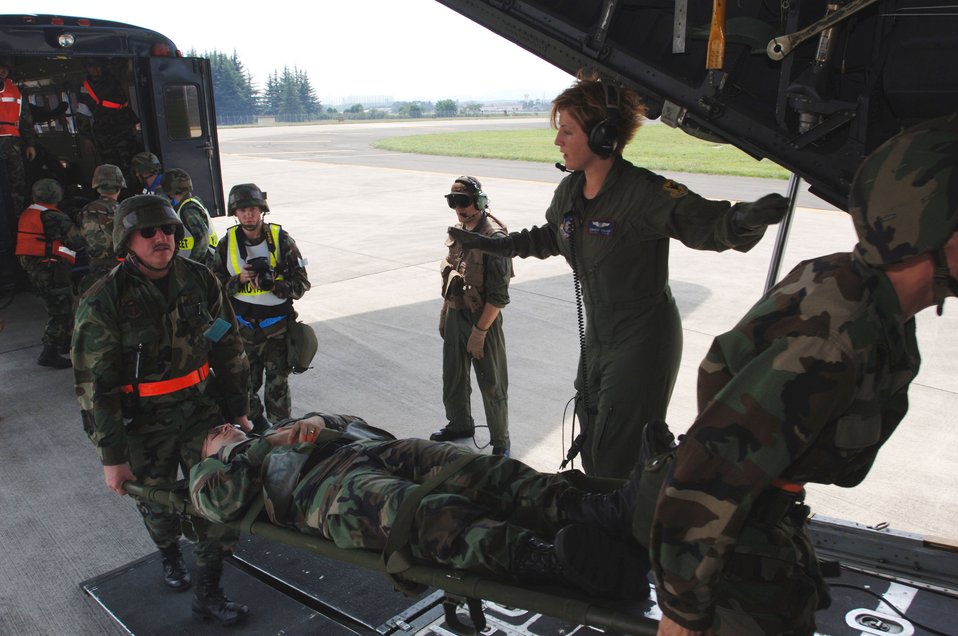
Training day

YOKOTA AIR BASE, Japan -- Capt. Jennifer Ralicki (back) coordinates the evacuation of